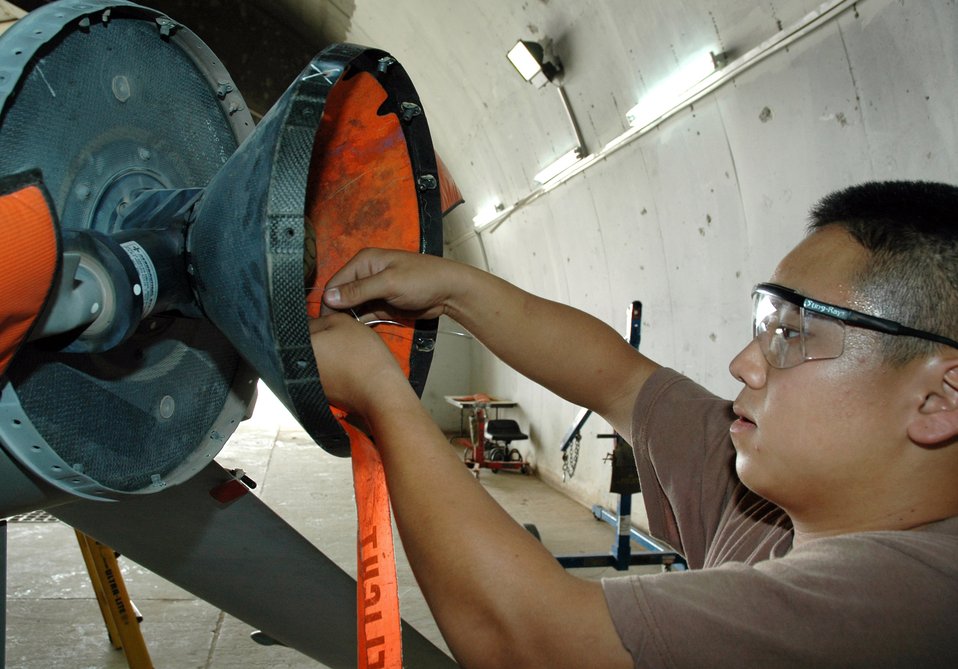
Keeping Predator primed and ready

BALAD AIR BASE, Iraq -- Airman 1st Class David Shin attaches safety wire to fasteners while installing a propeller on an MQ-1 Predator unmanned aerial vehicle. Working under the guidance of fully qualified crew chiefs, Predator avionics technicians here are learning a variety of maintenance procedures outside of their traditional duties. Airman Shin is an avionics technician with the 46th Aircraft Maintenance Unit here and is deployed from Creech Air Force Base, Nev.